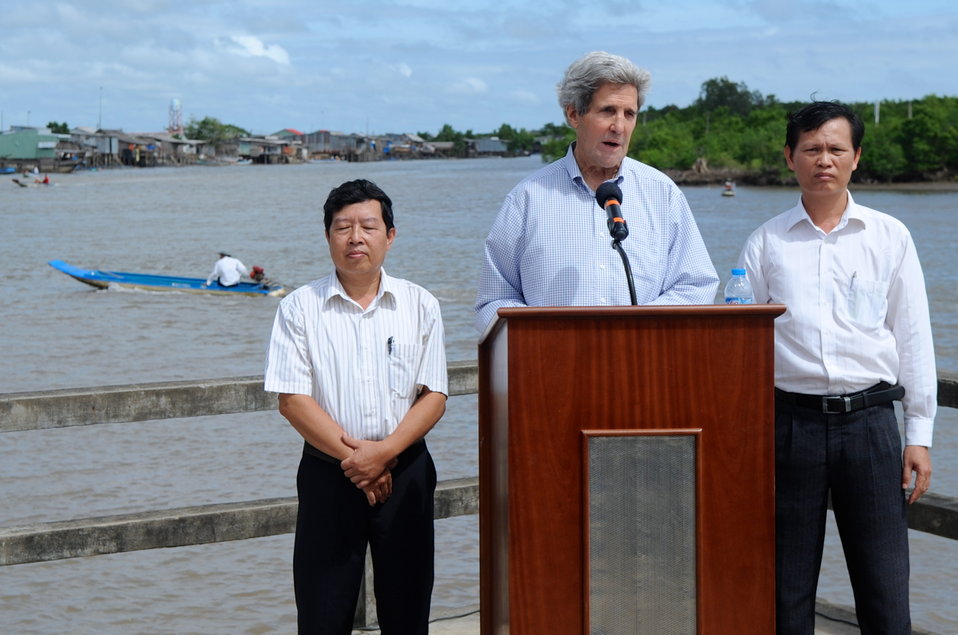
Secretary Kerry Delivers Remarks on Climate Change

U.S. Secretary of State John Kerry, joined by researchers Duong Van Ni and Dang Kieu Nhan, discusses the threatening effects of climate change during a visit to the village of Kien Vang on the Mekong River Delta in Vietnam on December 15, 2013.